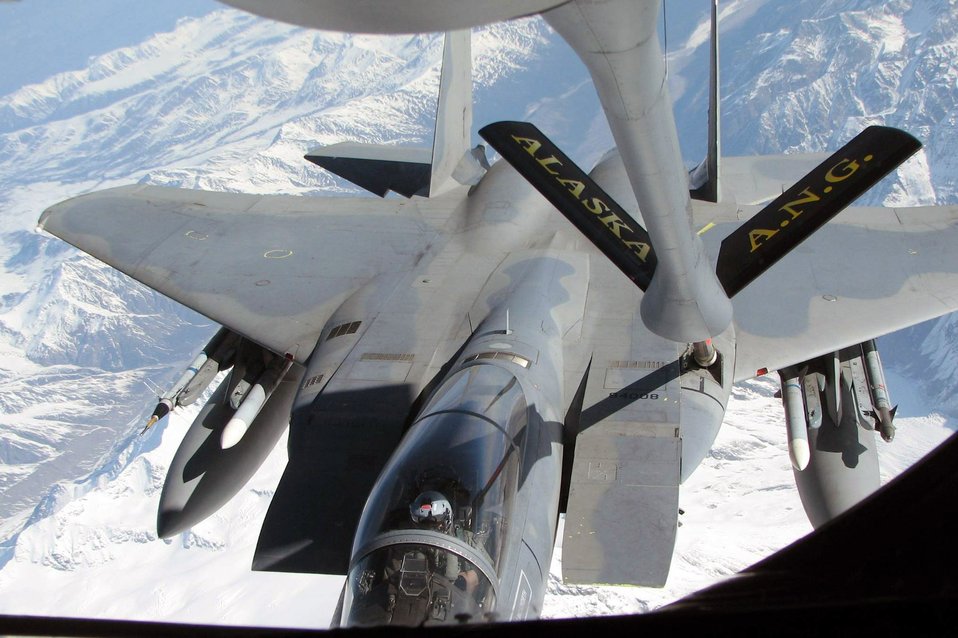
Alaska ANG KC-135s provide edge anytime, anywhere

An F-15 Eagle from the 3rd Wing at Elmendorf Air Force Base, Alaska, receives fuel from a KC-135 Stratotanker May 8 during Northern Edge 2008. The exercise, which began May 5 and concludes May 16, is designed to give Soldiers, Sailors, Airmen, Coast Guardsmen and Marines a chance to sharpen their skills prior to facing real-world combat scenarios. The KC-135 is part of the Alaska Air National Guard's 168th Air Refueling Wing from Eielson Air Force Base.